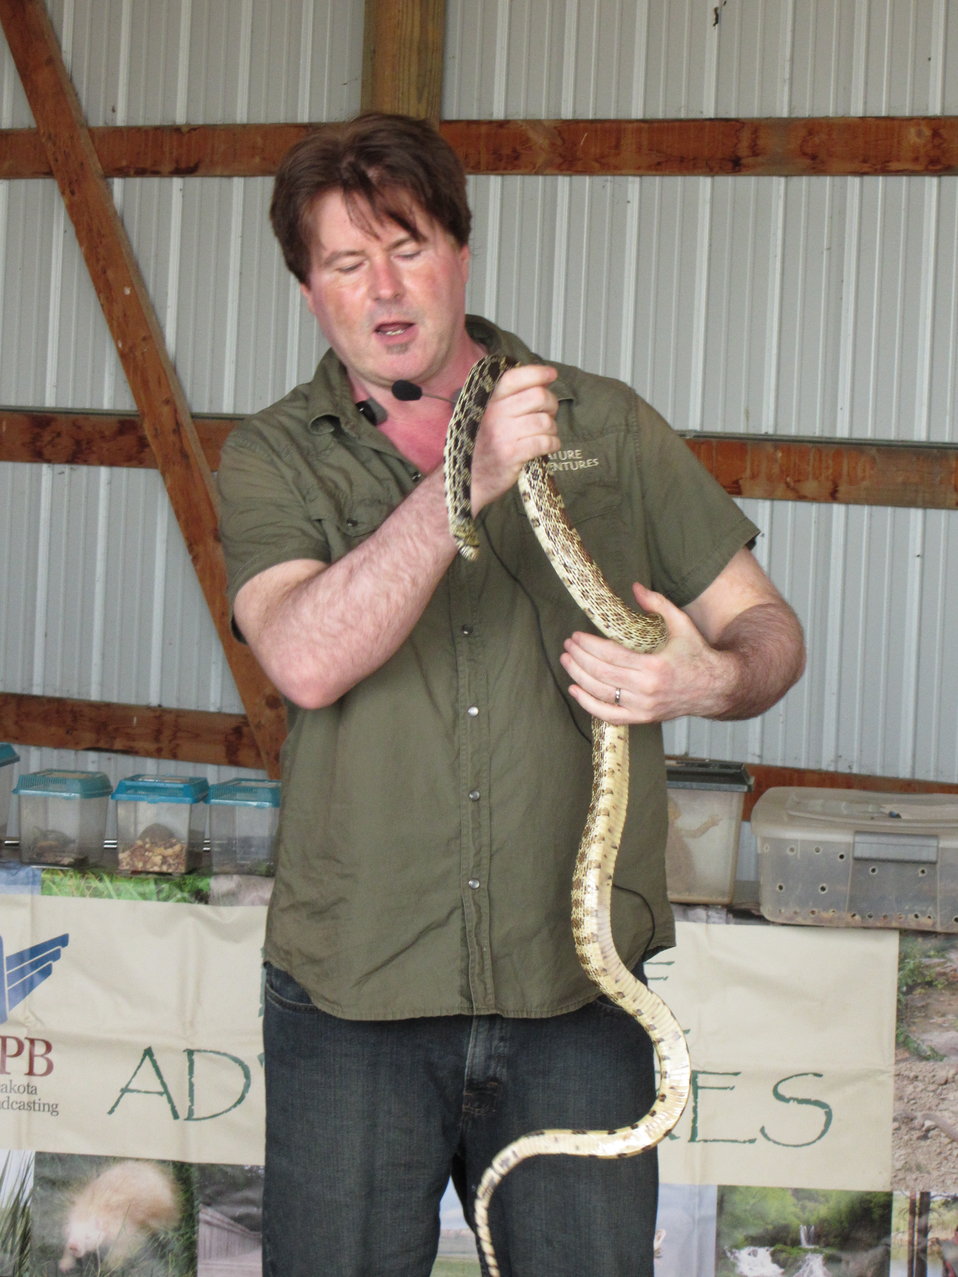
2011 Huron Prairie Fest